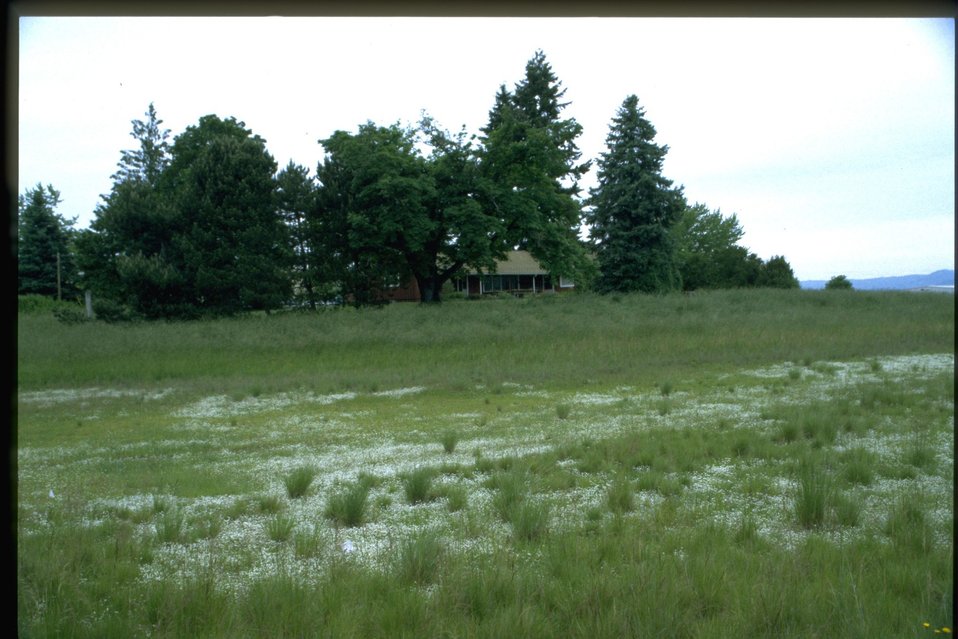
View of West Eugene Wetlands Administration building across meadow.